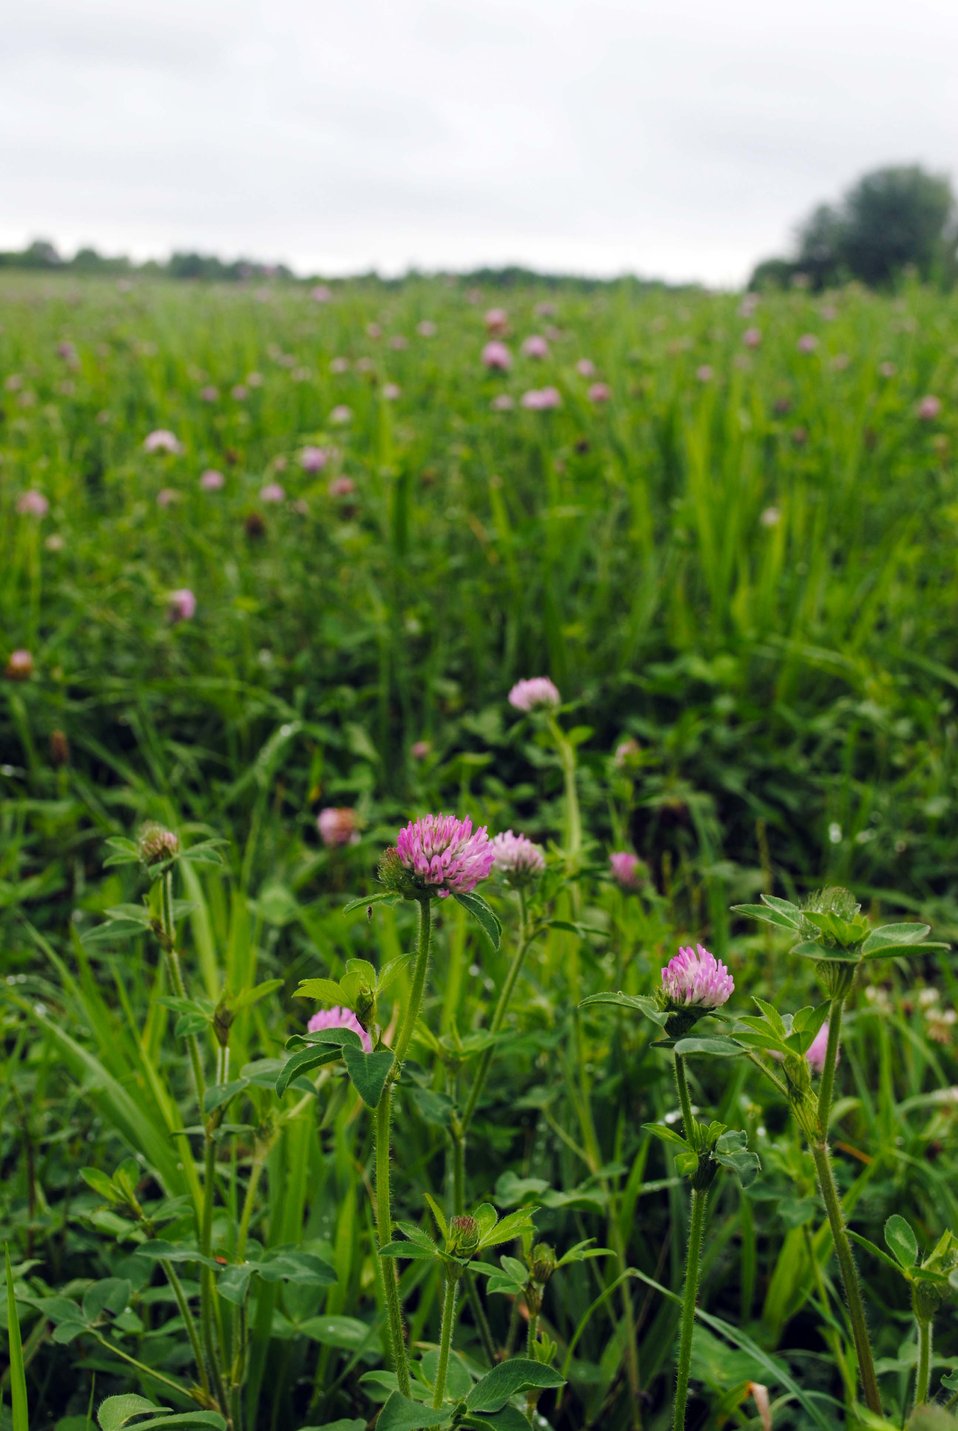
Field of Red Clover

Fort River Divison of the Silvio O. Conte National Wildlife Refuge, Hadley, MA.